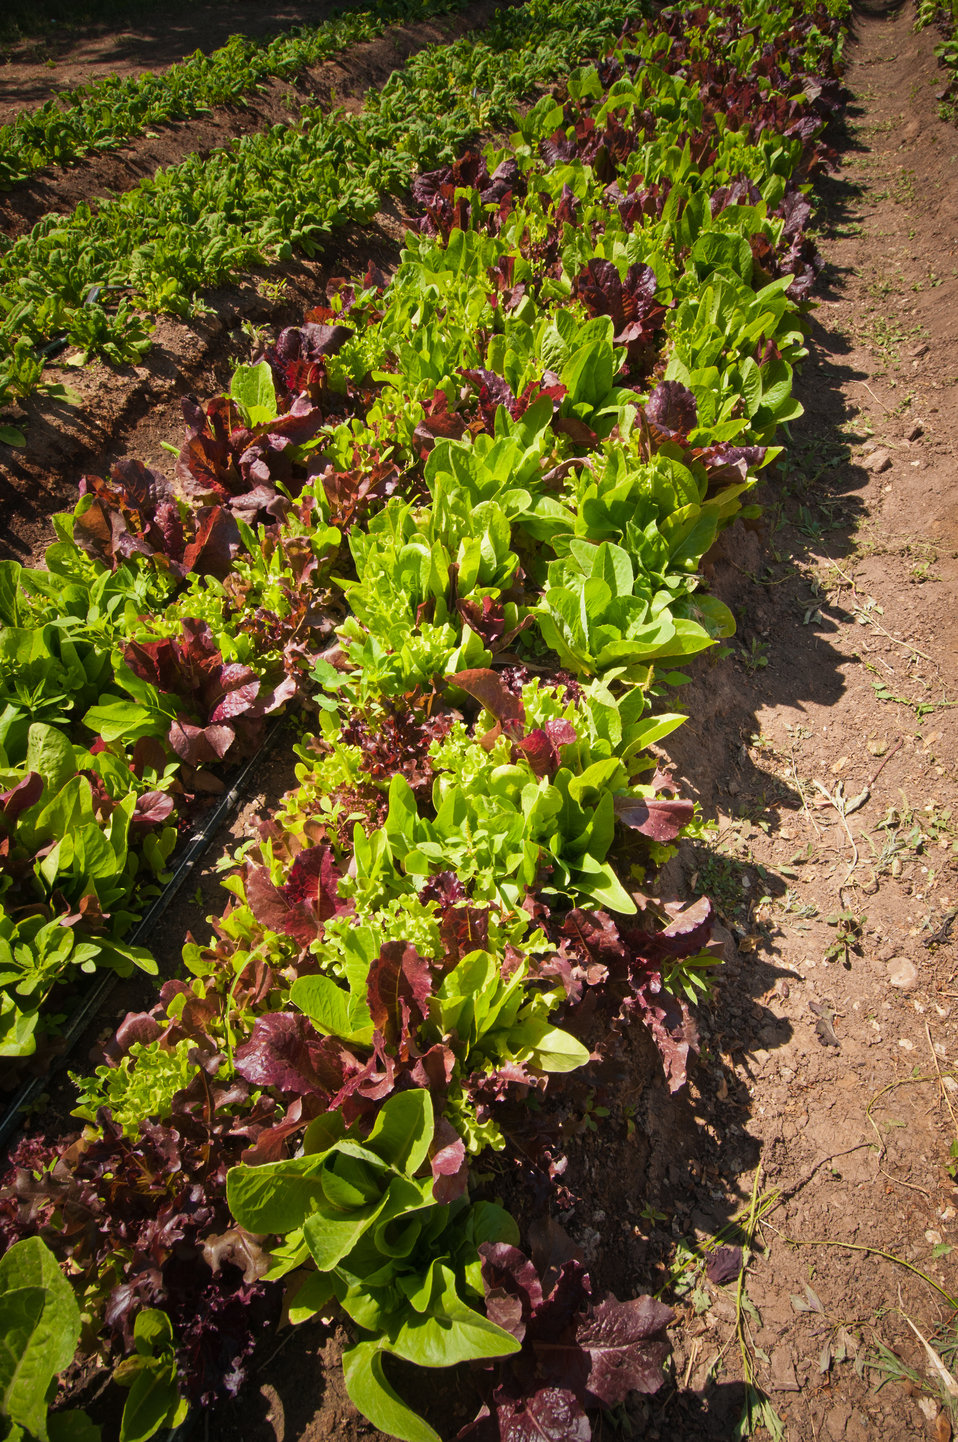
Lettuce grown on the Los Jardines Institute Farm, Albuquerque, NM. Los Jardines Institute Farm, a local sustainable farm, was able to acquire a loan from the La Montanita Co-op. La Montanita Co-op offers loans to local farmers and food producers for development. La Montanita Co-op is a 17,000 member socially responsible, locally owned food cooperative that supports a stable market for local farmers and producers of sustainable and organic regional/local agriculture in Albuquerque, NM. The co-op has a distribution center and two stores in Albuquerque; Valley and Nob Hill and stores in Santa Fe and Gallup, NM.